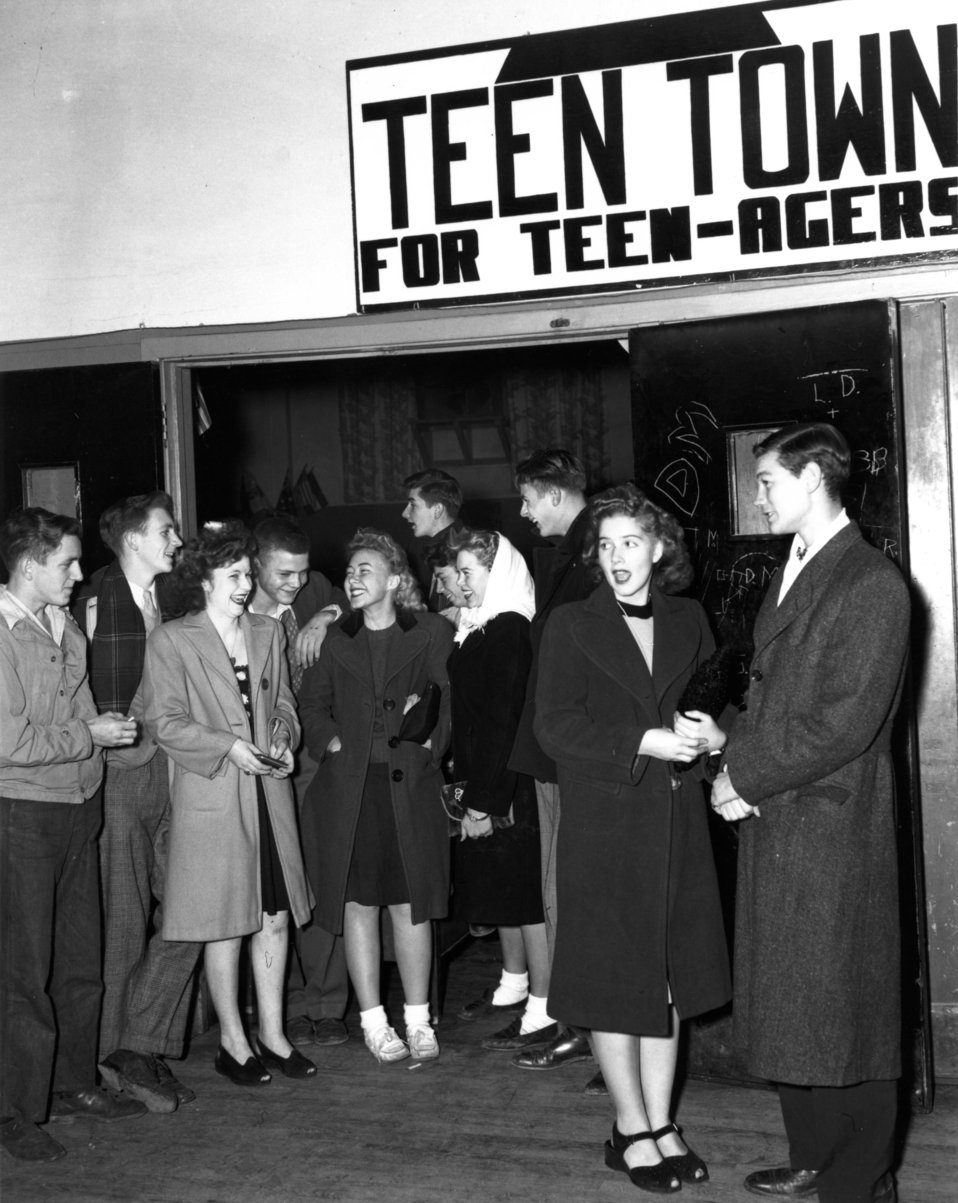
Recreation at Oak Ridge